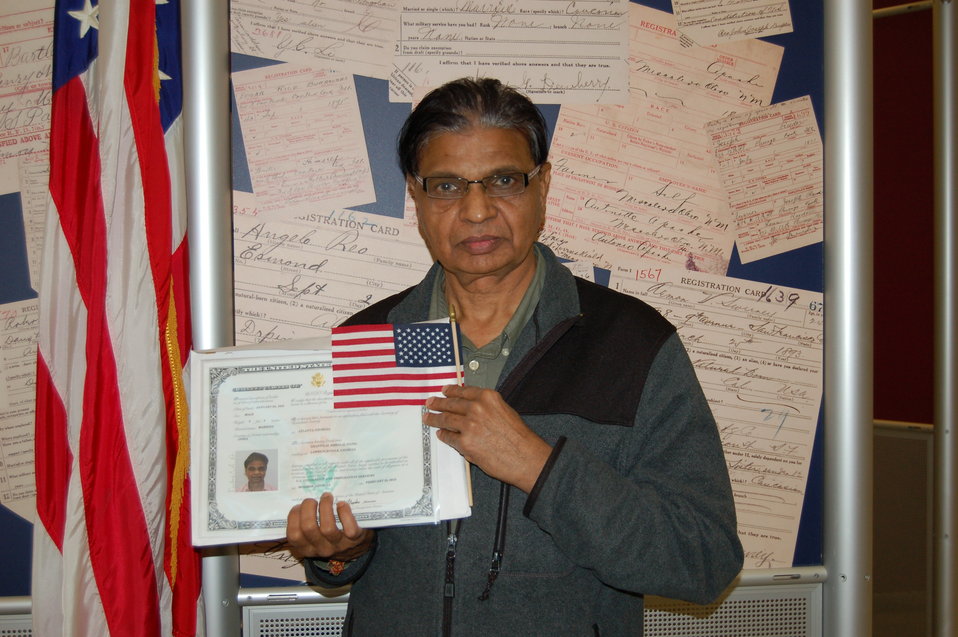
New Citizens